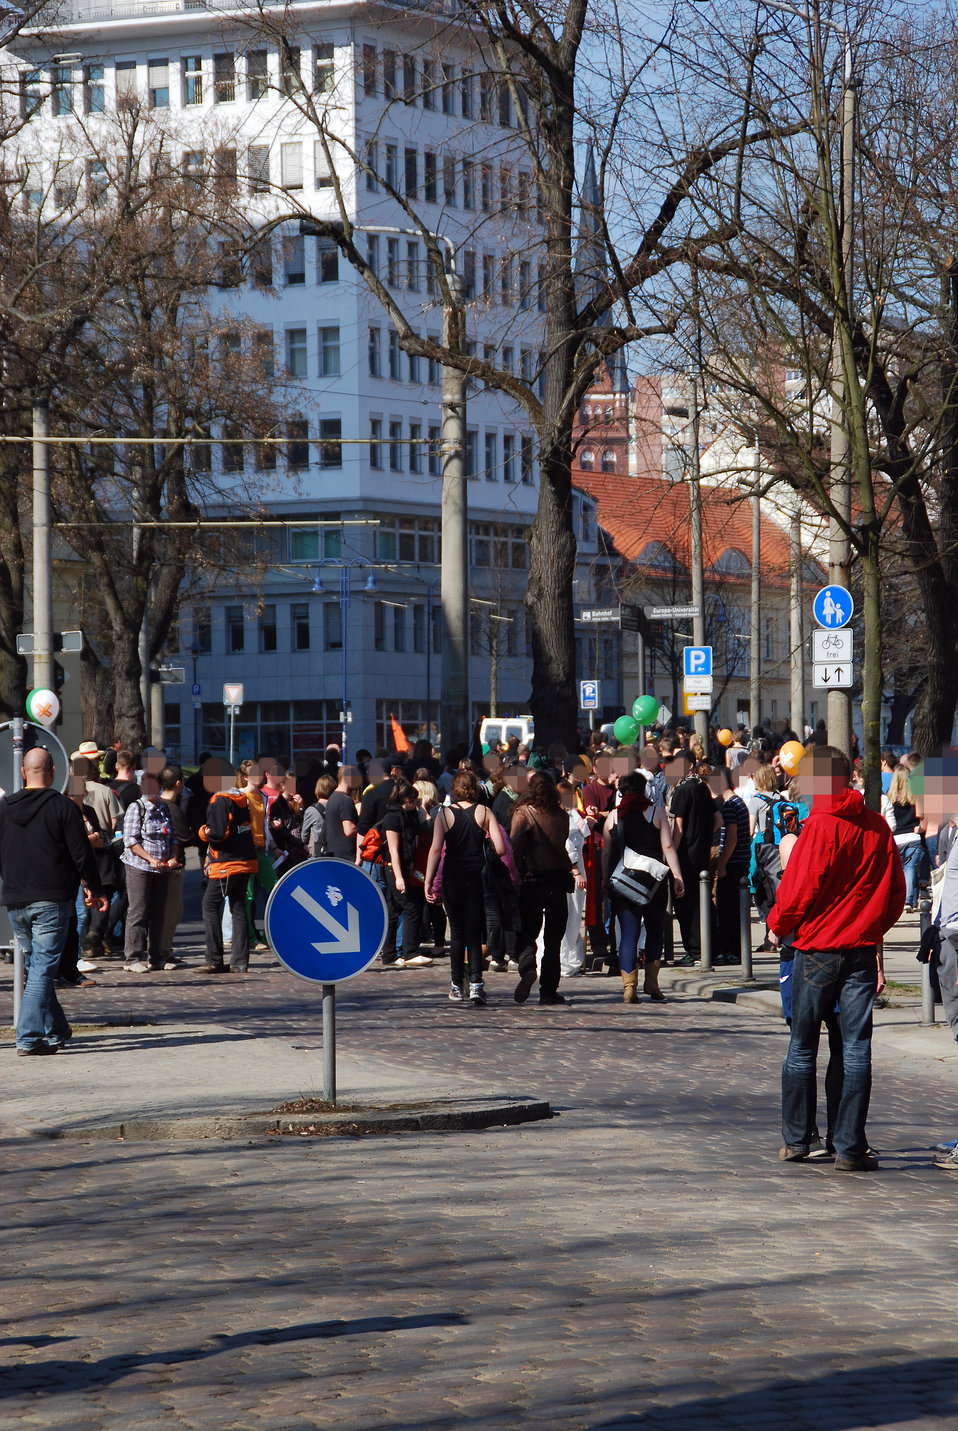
Proteste gegen den Nazi-Aufmarsch am 24.3.2012 in Frankfurt (Oder)